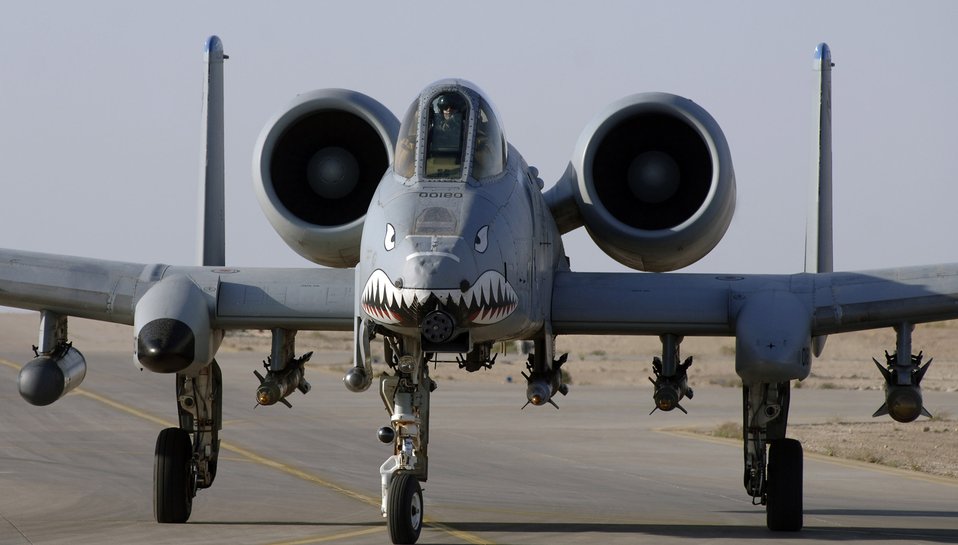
A-10 provides top cover for troops in Iraq

An A-10 Thunderbolt II takes off to provide close-air support to ground troops in Iraq April 25 from Al Asad Air Base, Iraq. The 438th Air Expeditionary Group A-10s perform 10 sorties daily, with 900 sorties in this last four months.